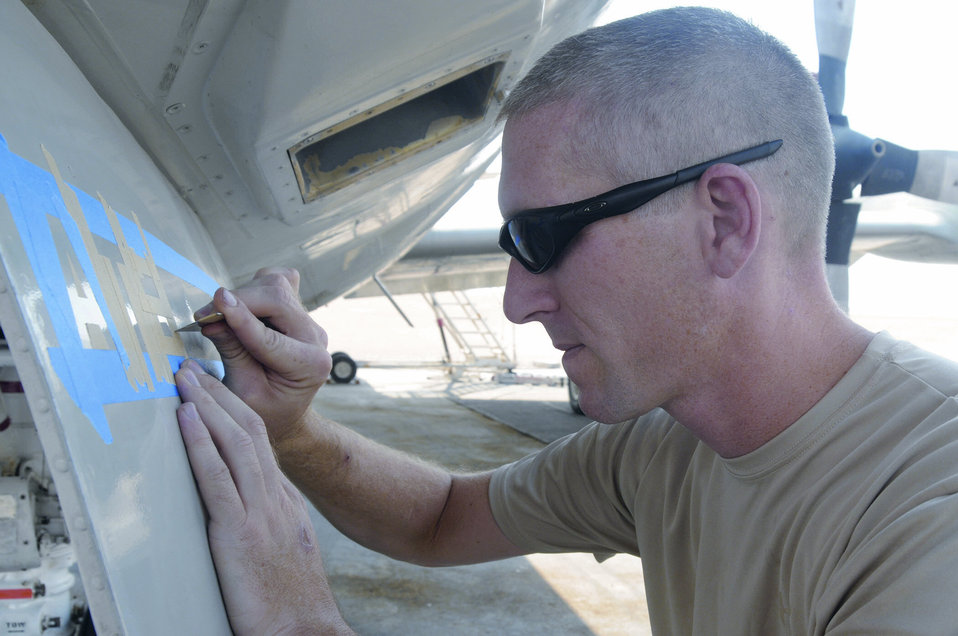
VP-46: GWOT Jack of all trades

Aviation Structural Mechanic 2nd Class Matthew Stender uses a razor and tape to block letters so the names of the maintainer of the month and operations sailor of the month can be painted onto a P-3 Orion at a base in Southwest Asia Oct. 27. The names are painted in order to recognize members of the squadron who excel at their job. Mechanic Stender, a native of Wyoming, Iowa, is deployed from Naval Air Station Whidbey Island, Wash.